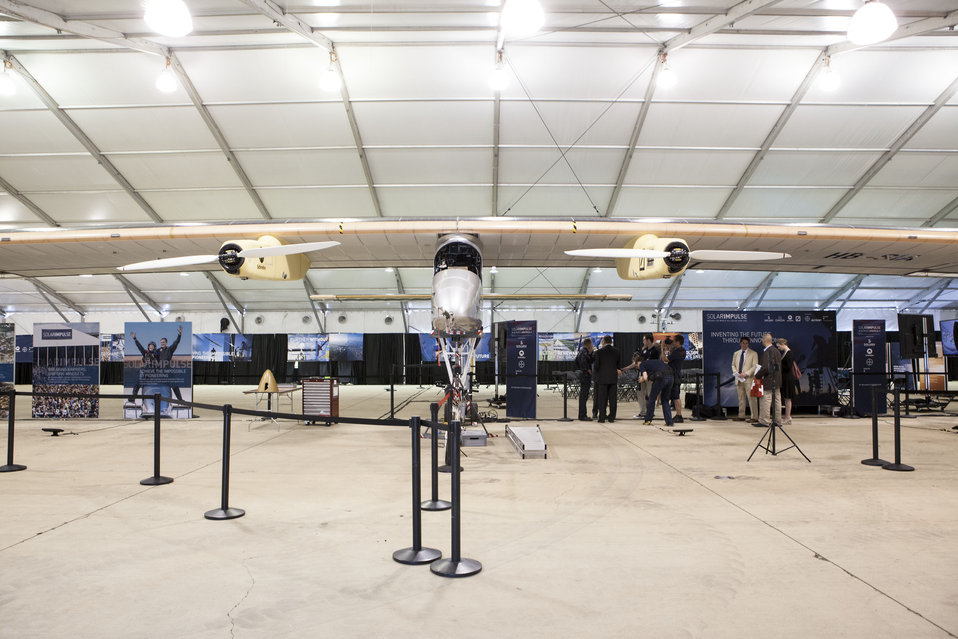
Solar Plane Lands in D.C.

The solar-powered plane boasts a wingspan of 208 feet, but weighs about as much as the average car. The plane took off from Cincinnati, Ohio, on June 15 and arrived in Washington, D.C., on June 16.